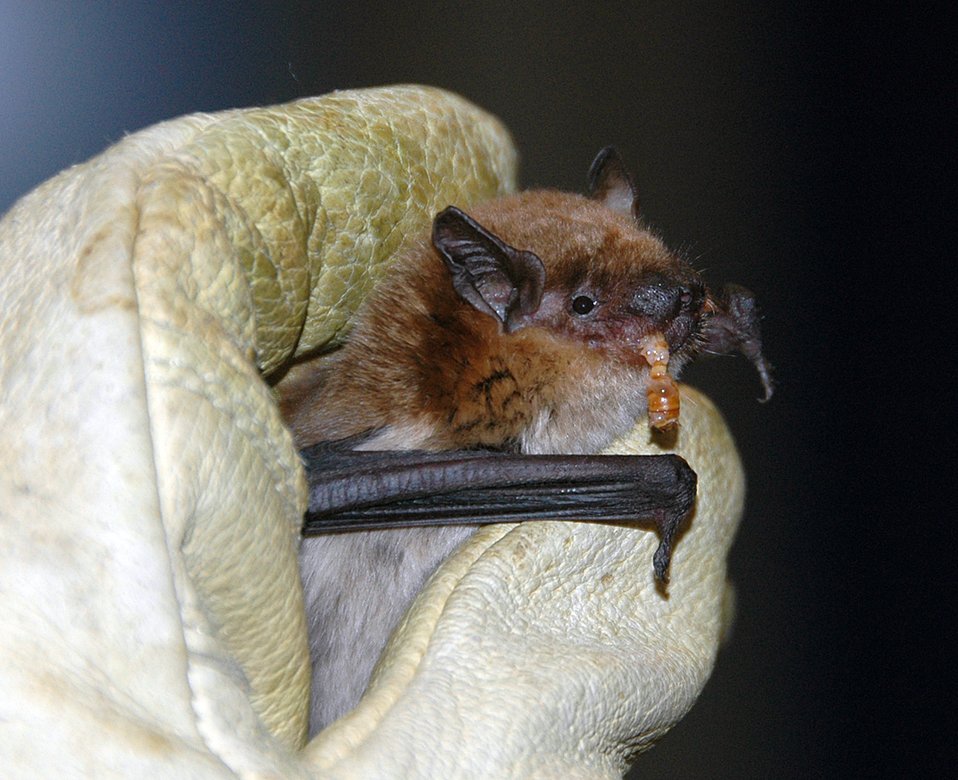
Big brown bat eats a meal worm

A big brown bat munches on a meal worm